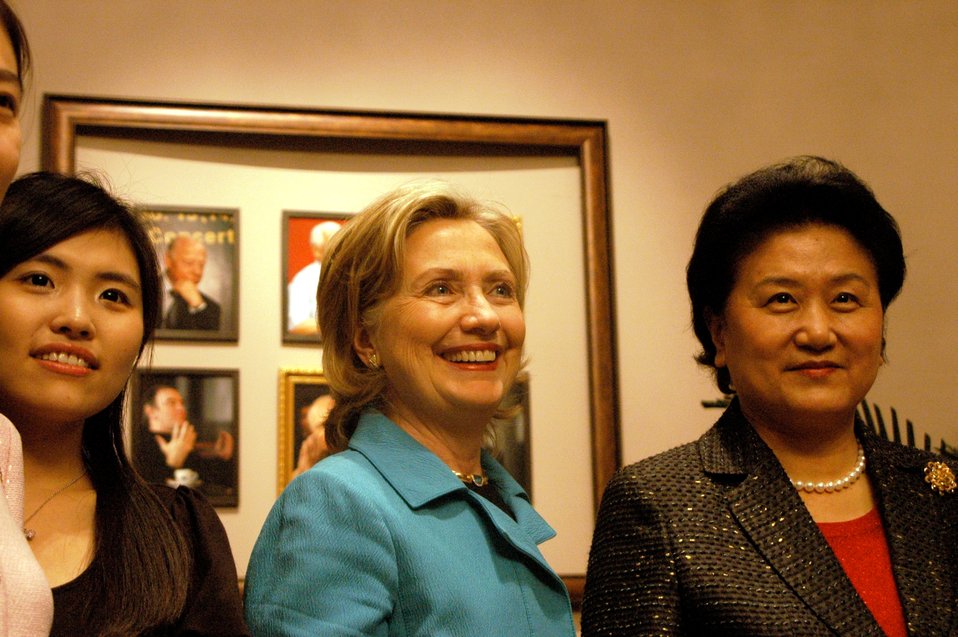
Secretary Clinton and Chinese State Councilor Liu Yandong Meet With Chinese Women Civil Society Leaders

U.S. Secretary of State Hillary Rodham Clinton and Chinese State Councilor Liu Yandong meet with Chinese Women Civil Society Leaders in Beijing, China, May 26, 2010.